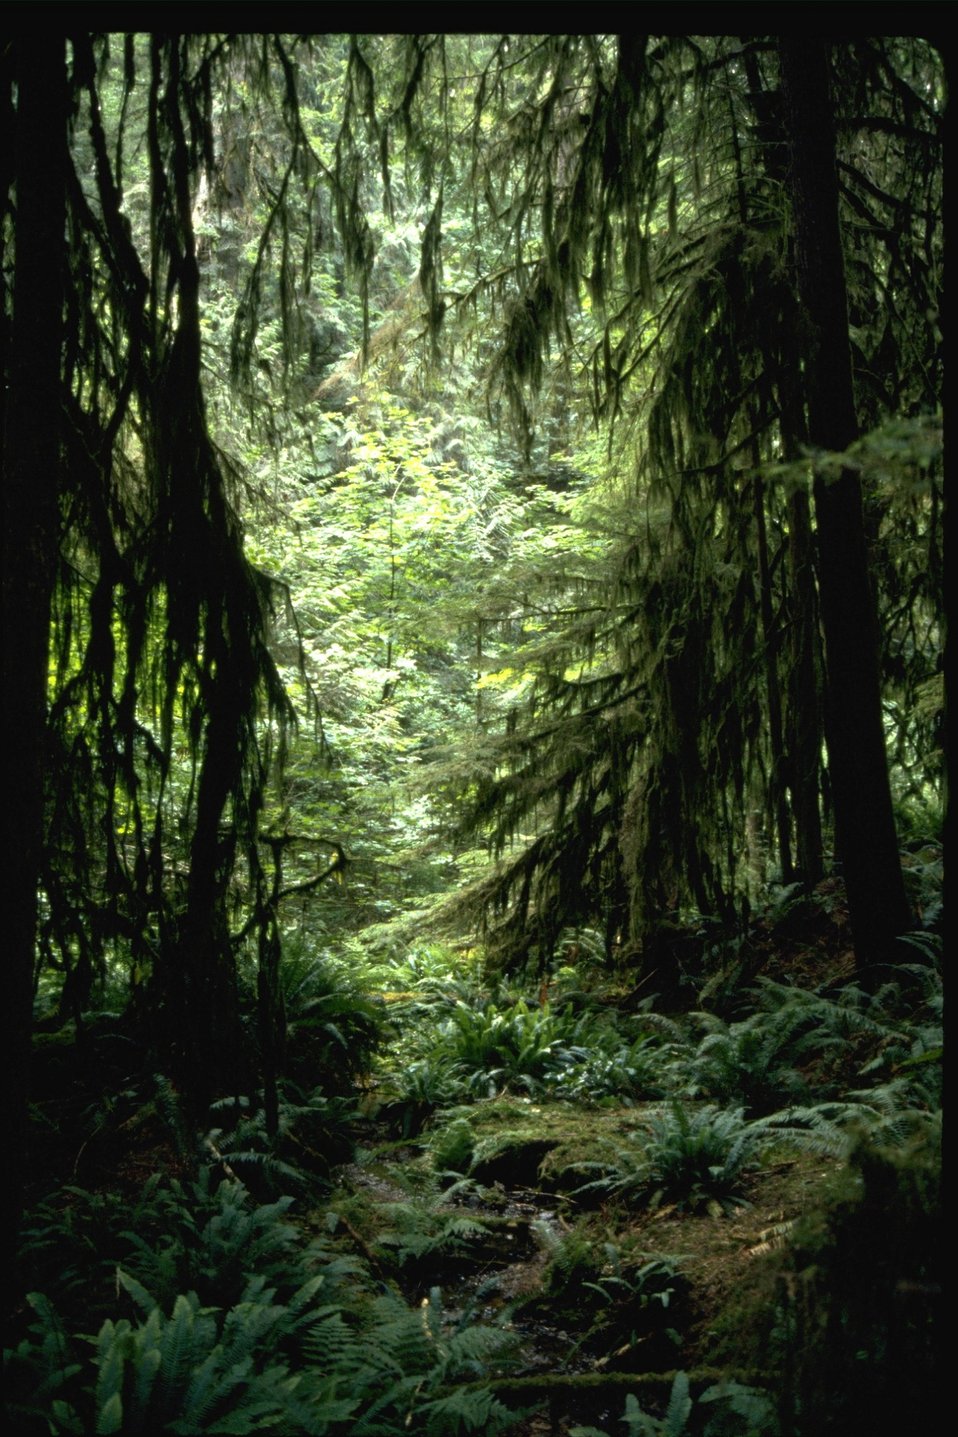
Scenic forest photograph.